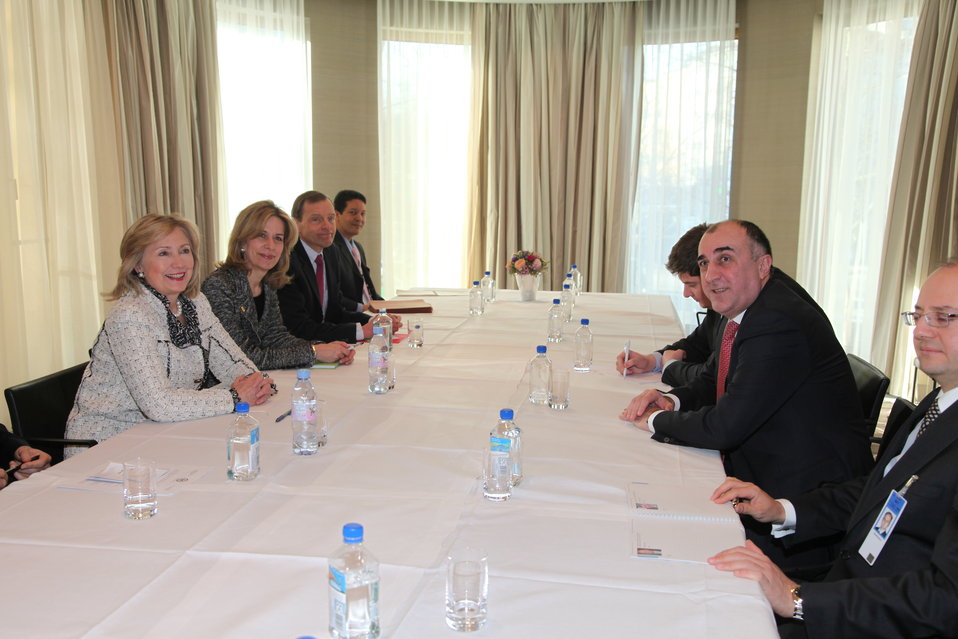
Secretary Clinton Holds a Bilateral Meeting With Azerbaijan Foreign Minister Mammadyarov

U.S. Secretary of State Hillary Rodham Clinton holds a bilateral meeting Azerbaijani Foreign Minister Elmar Mammadyravov in Munich, Germany, on February 6, 2011.